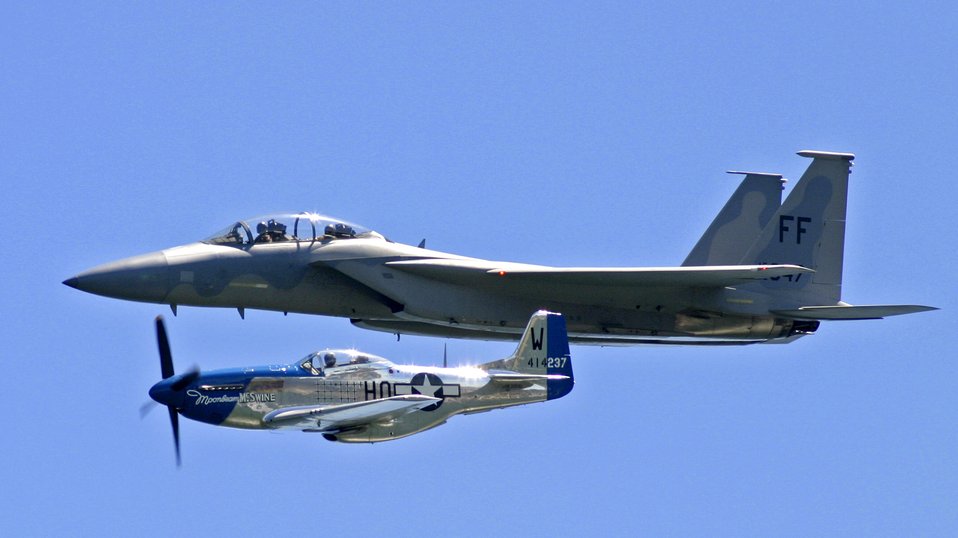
Milwaukee air show

An F-15E Strike Eagle flies with a World War II-era North American P-51 Mustang. The two aircraft performed at an air show in Milwaukee July 15 and 16.